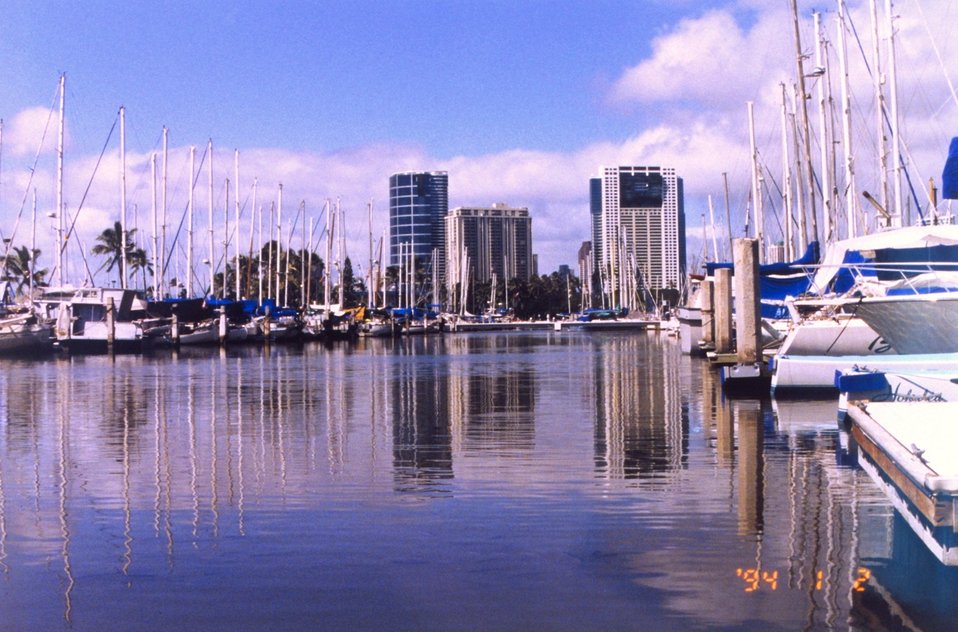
A view at the Ali Wai Yacht Harbor near Waikiki Beach.